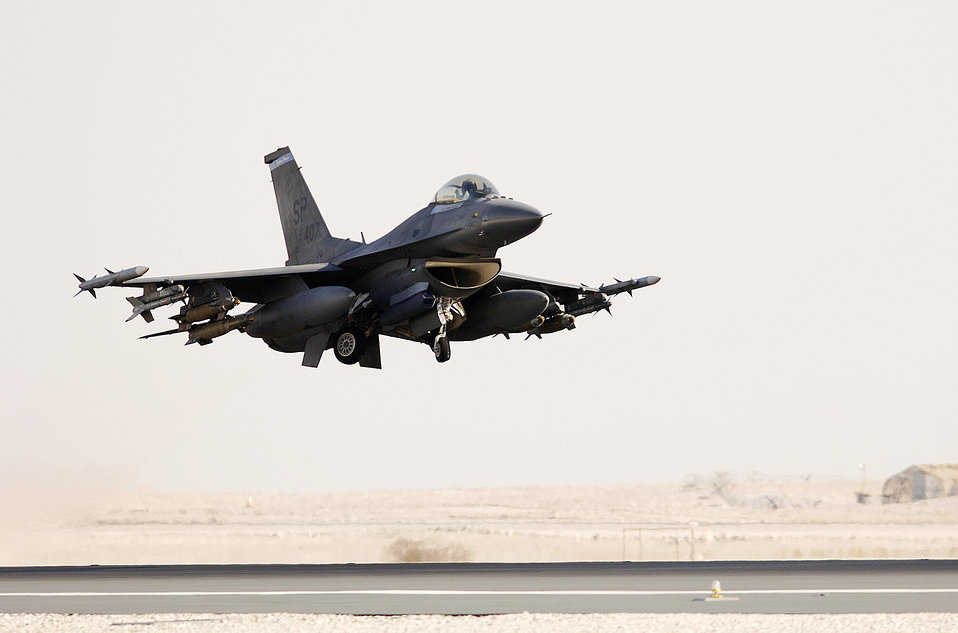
CENTAF Airpower Summary for May 3, 2007

An F-16 Fighting Falcon takes off from a base in Iraq recently to perform a close-air-support mission for coalition ground forces. Combined Forces Air Component aircraft like the F-16 flew 48 close-air-support missions May 3, primarily in northern Iraq, and responded to coalition ground forces in contact with enemy personnel.